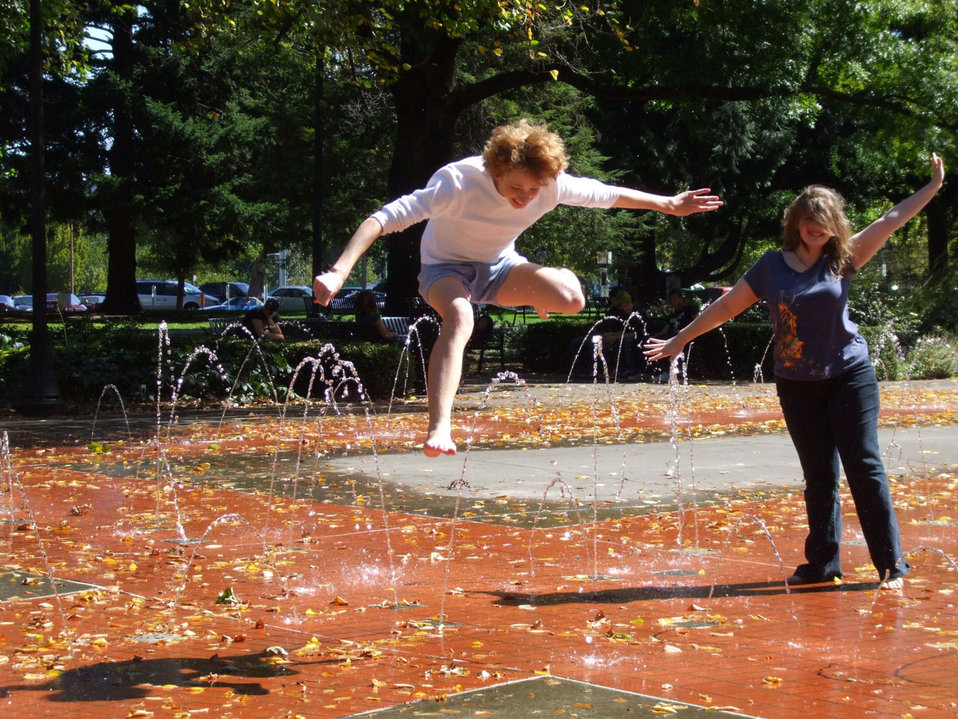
Fun in the fountain

Friends in portland.